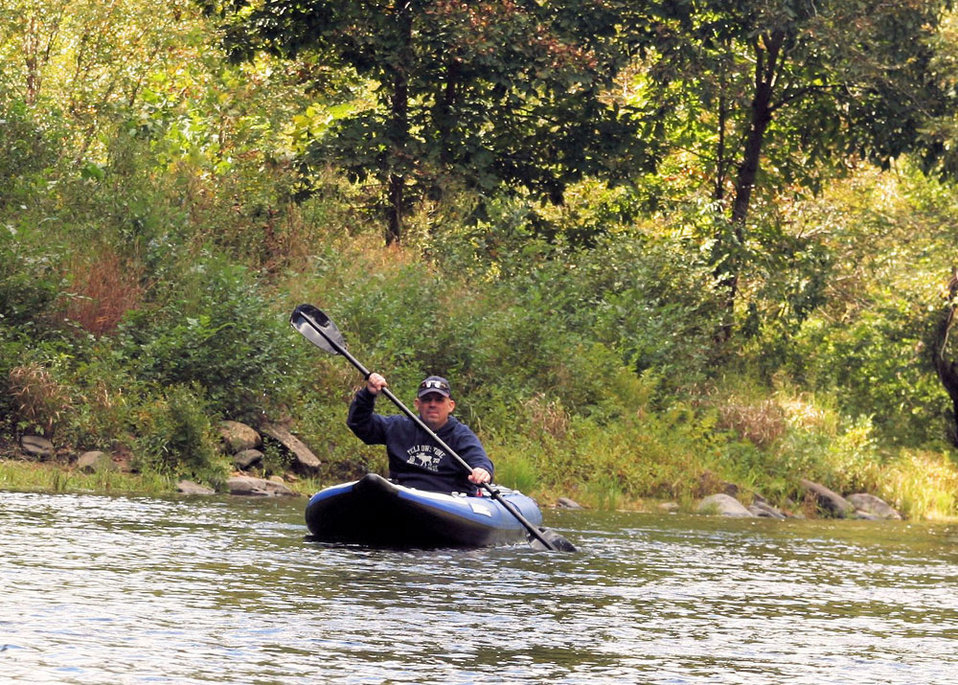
Scott Knight -- NCTC

Scott Knight served in the U.S. Army as a communications specialist from 1988 to 1994. He was deployed during Operation Desert Storm to Saudi Arabia in November of 1990 as part of Operation Desert Storm for 6 months. After leaving full-time service Scott served two years in the Army Reserve, while completing his education. Scott currently works at the National Training Coordinator for the Service's Wildlife and Sport Fish Restoration Program and is stationed at the National Conservation Training Center.